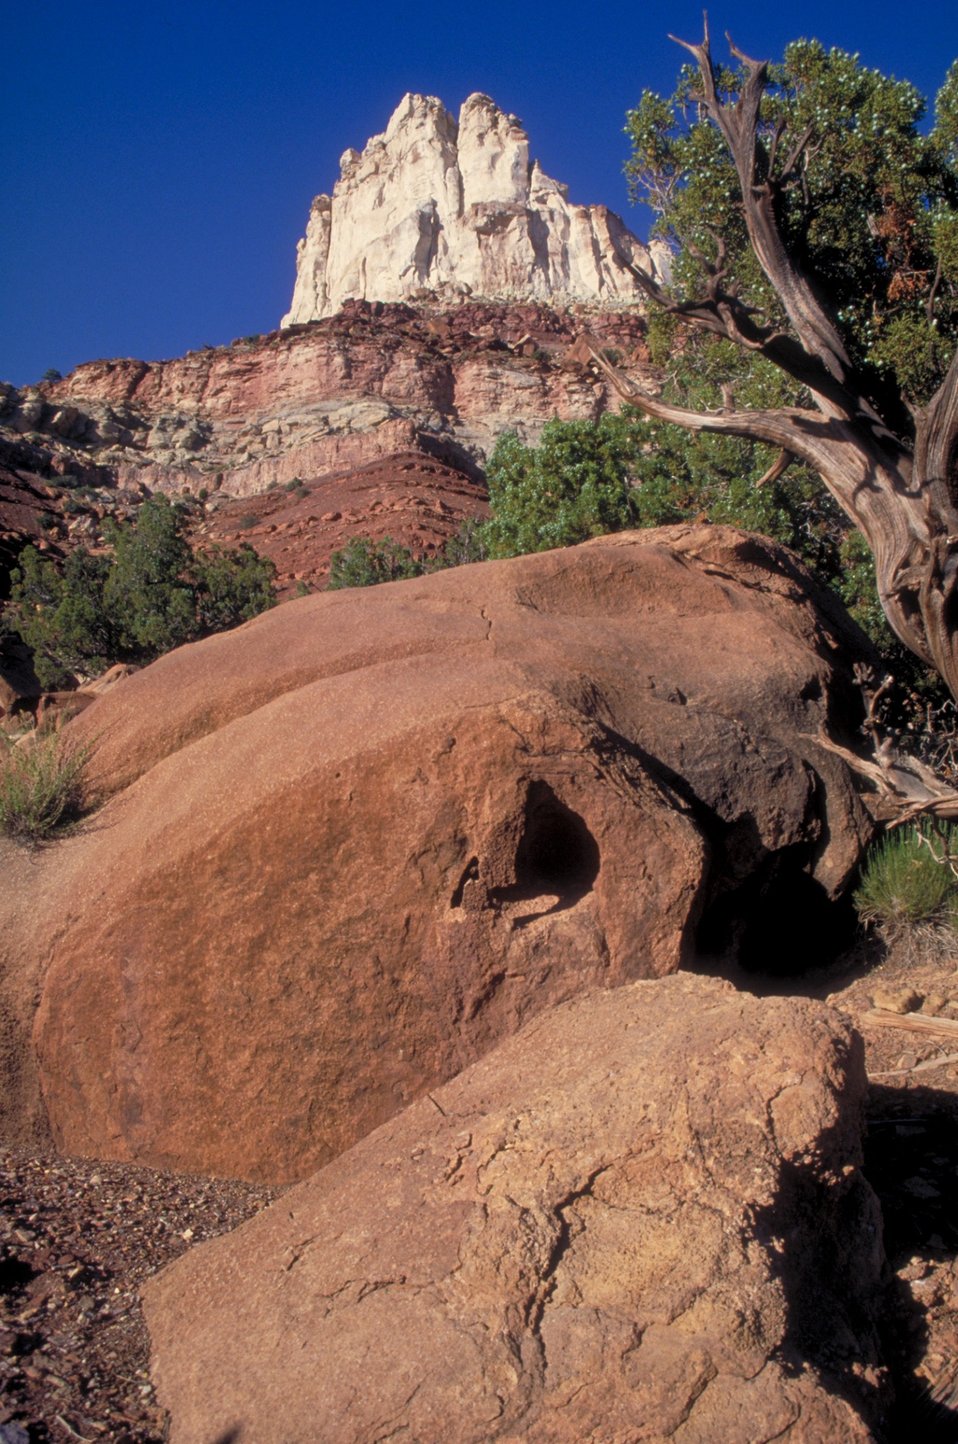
Temple Mountain, San Rafael Swell.